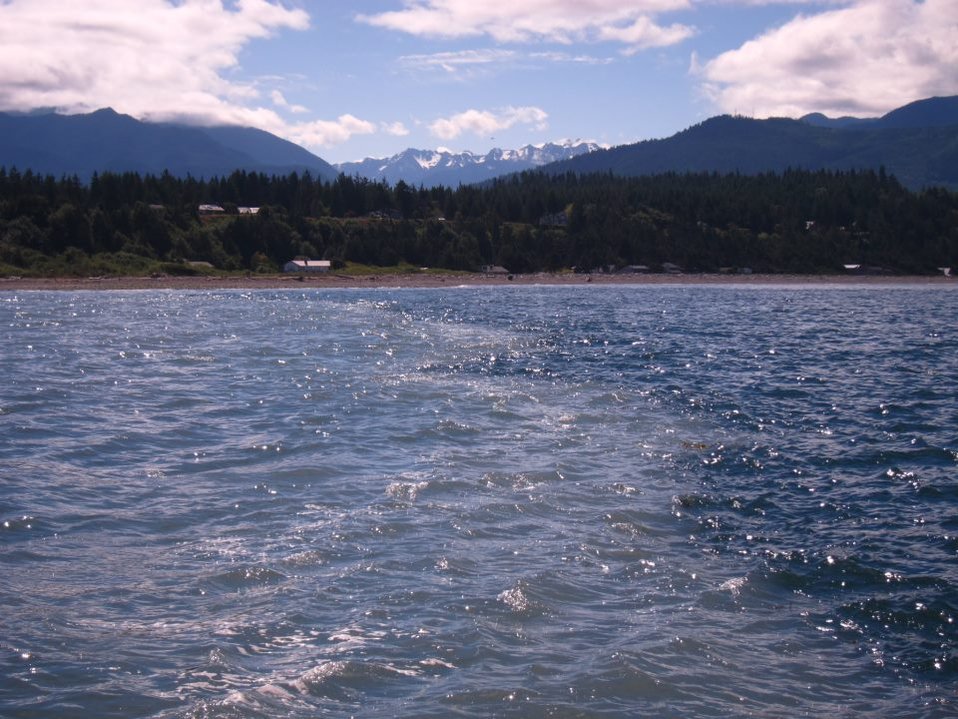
July 26, 2012 Edge of silt plume visible, Olympic Mountains in background

USGS scientists and divers with the Lower Elwha Klallam Tribe, EPA, and Washington Sea Grant, went underwater to study the impacts to the Strait of Juan de Fuca now that removal of the Elwha River dams is well underway.

The edge of the silt plume from the Elwha River is very distinct in the Strait of Juan de Fuca. Glacier topped high mountain peaks deep within the Olympic National Park are visible in the background.